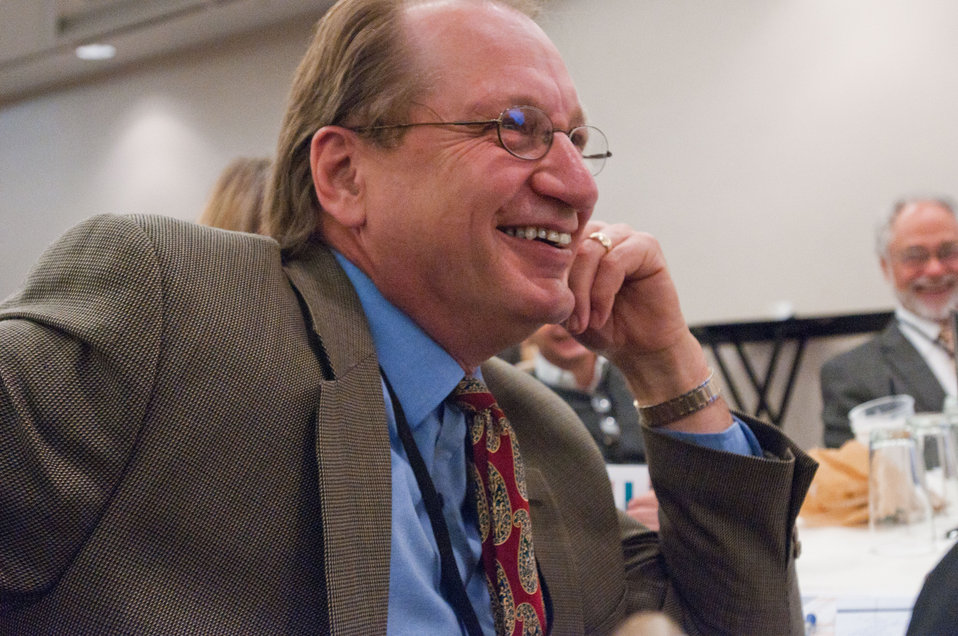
Center for Rural Affairs Executive Director Chuck Hassebrook, was one of several people to ask U.S. Department of Agriculture (USDA) Secretary Tom Vilsack, a question after the Secretary’s keynote address, at the Rural Wealth Creation and Livelihoods national conference for practitioners, researchers and policymakers, held at the Dupont Hotel, Washington DC, on Monday October 3, 2011. USDA partnered with the Ford Foundation to sponsor the conference.